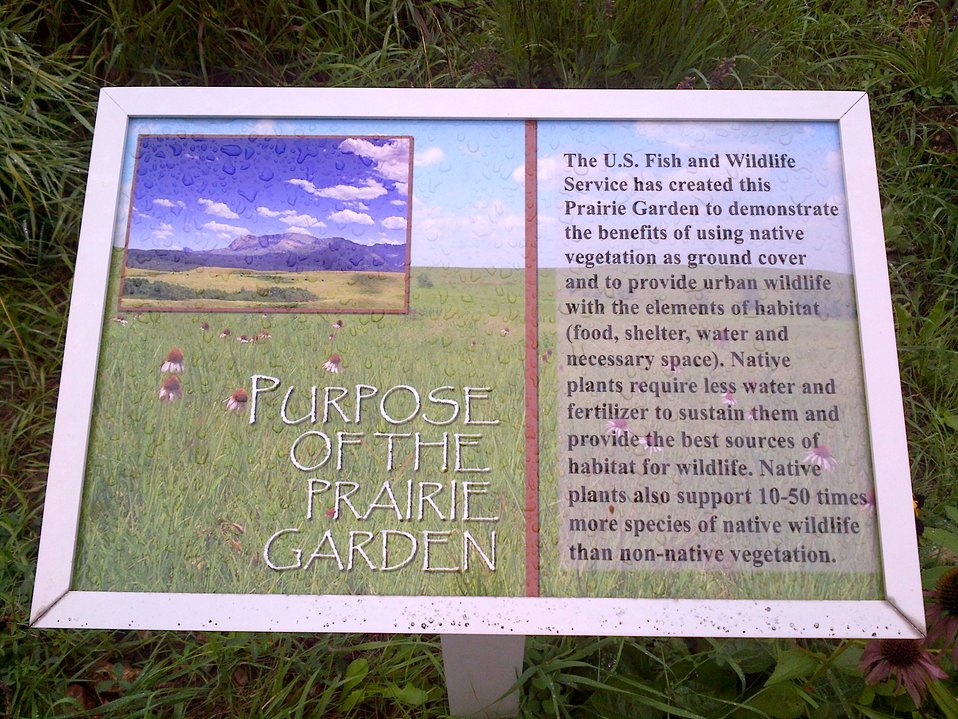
Sign Prairie Garden